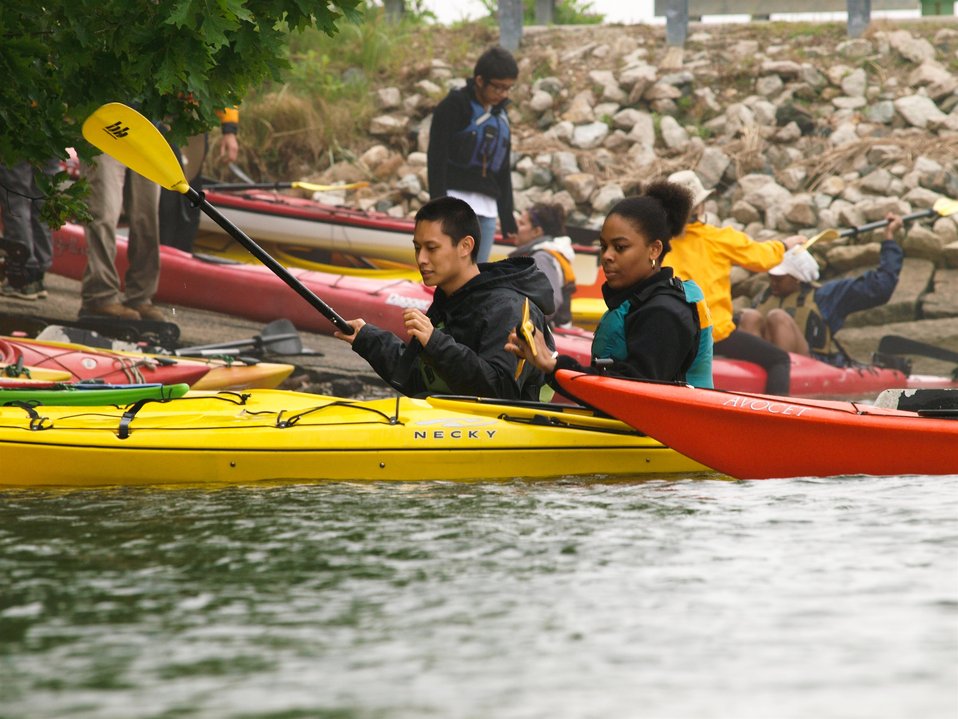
Kayak Trip